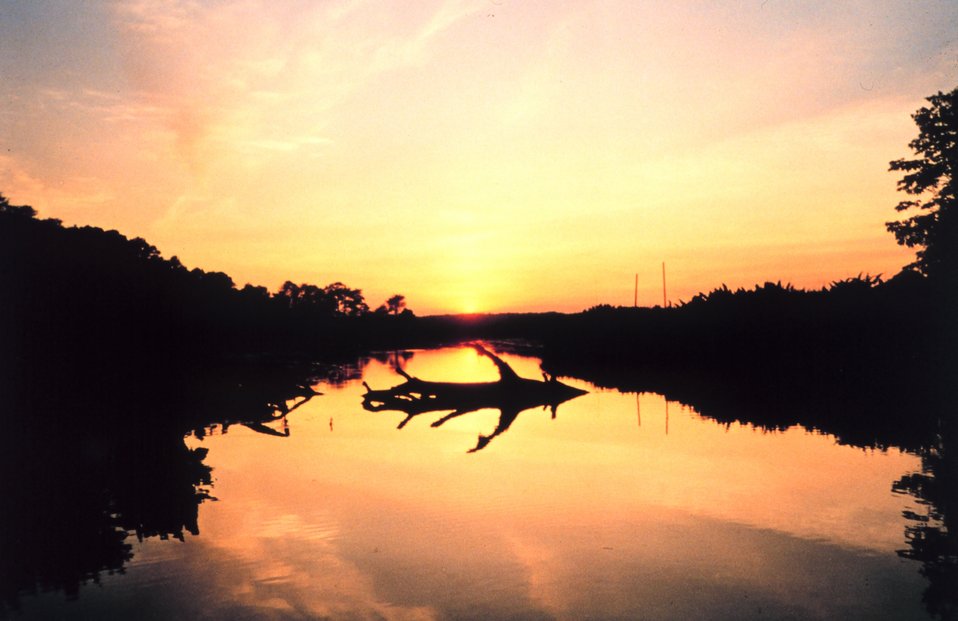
Sunset over the marsh at Cardinal Cove